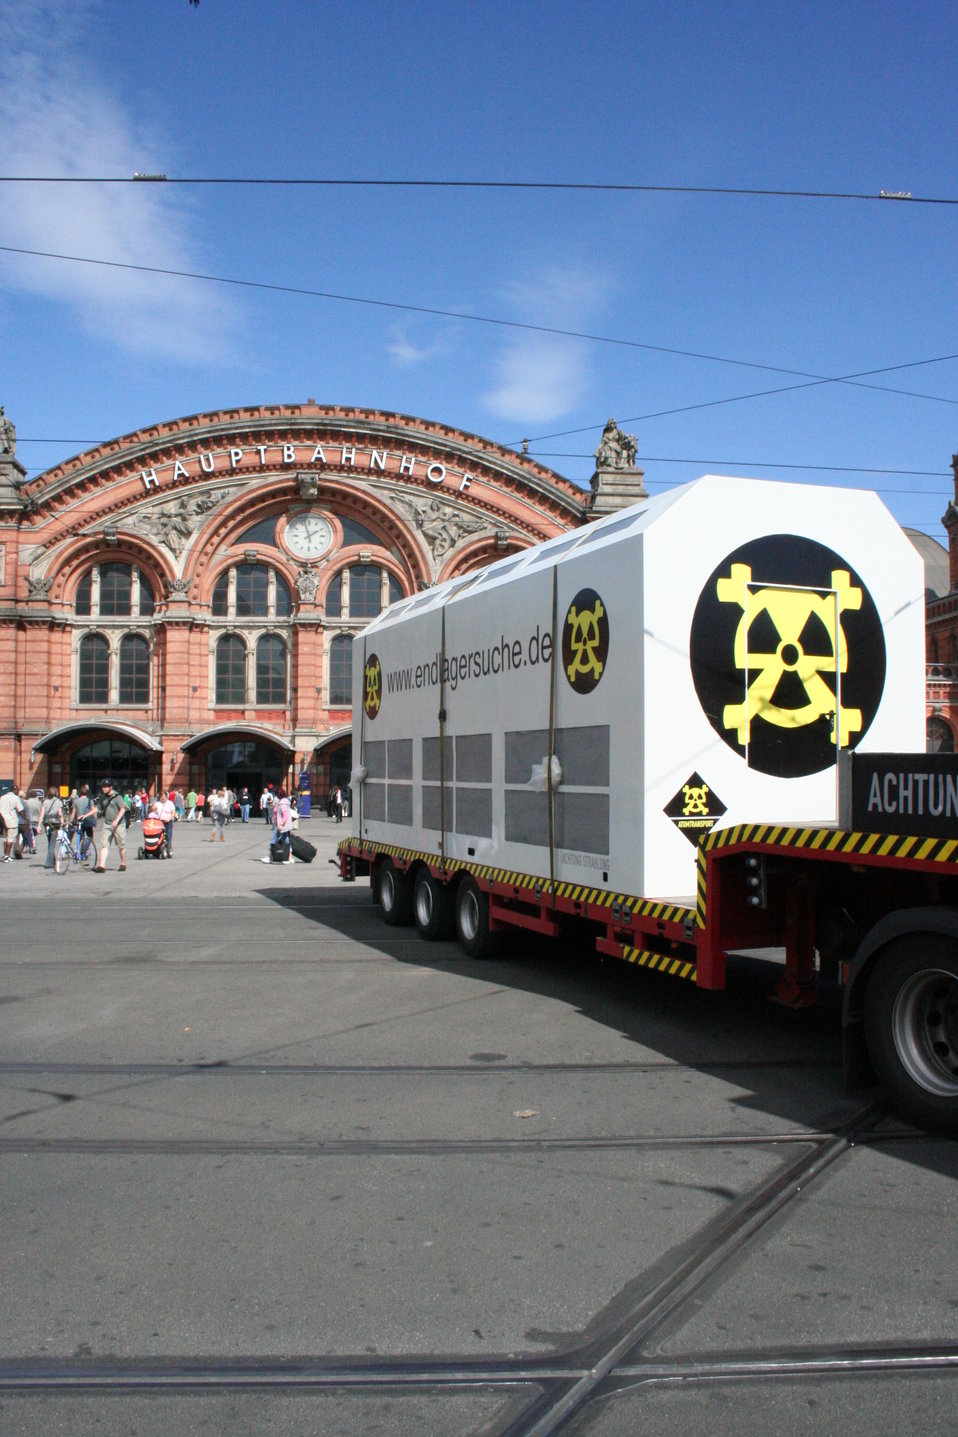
Deutsch: campact-aktion 'Endlagersuche' mit gefakten Castortransport in Bremen